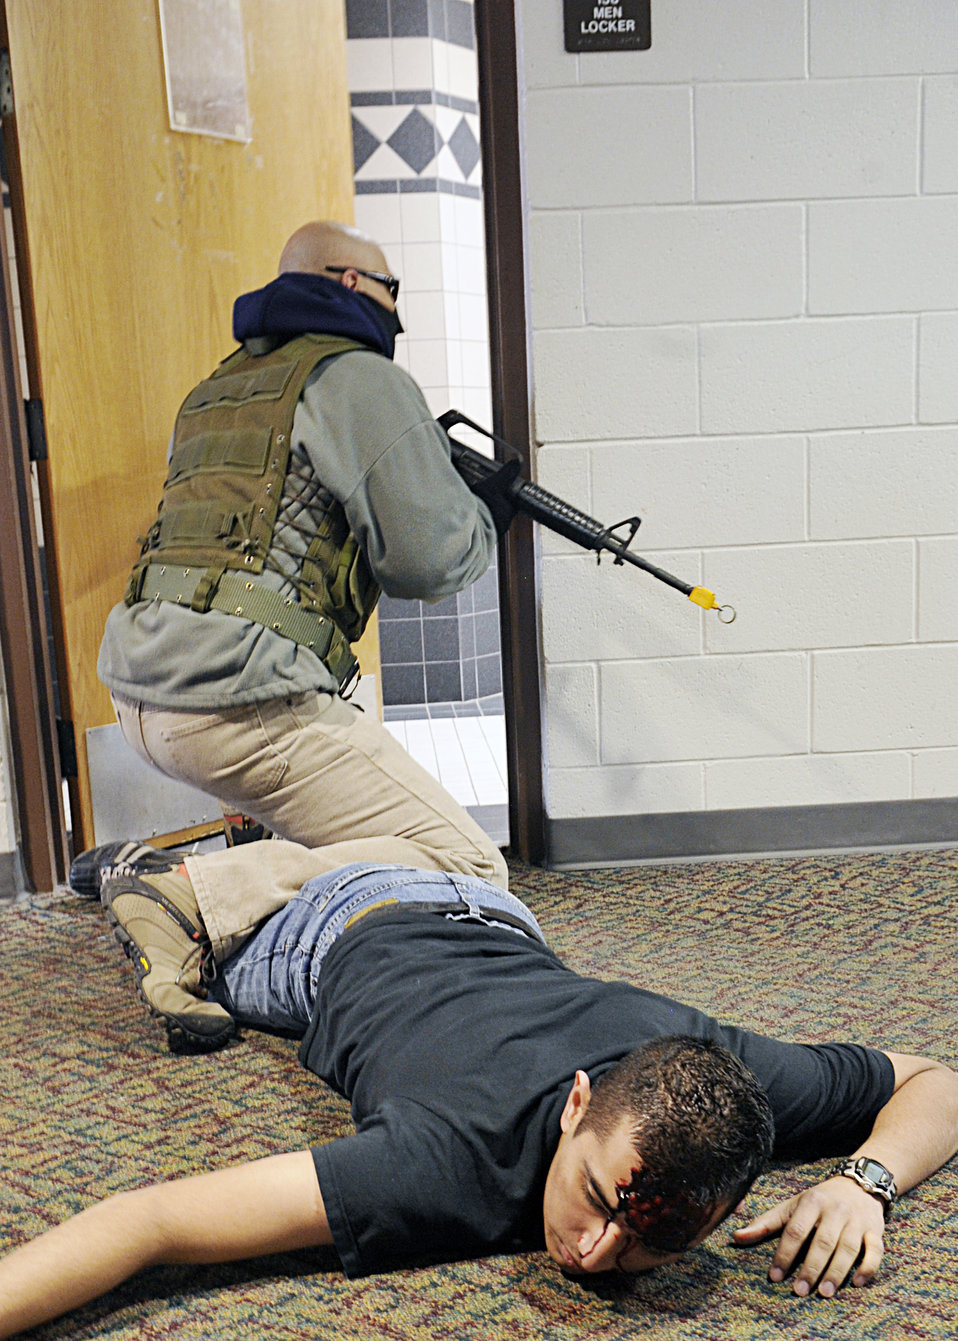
Holloman Airmen train for worst in active shooter exercise

A security forces Airmen looks for an armed gunman as a simulated individual lays on the ground after being injured by the gunmen during an exercise March 11, 2010, at Holloman Air Force Base, N.M.